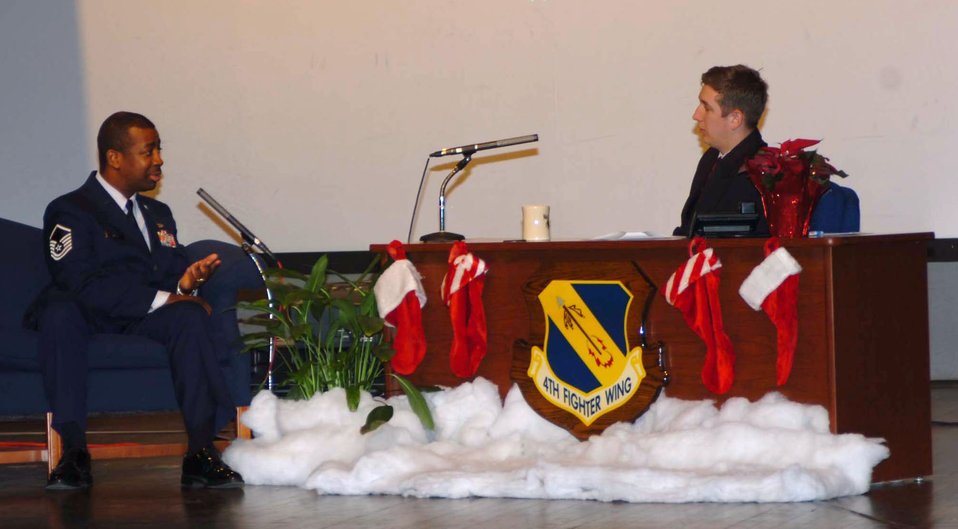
Drinking program

SEYMOUR JOHNSON AIR FORCE BASE, N.C. (AFPN) -- Master Sgt. Troy Harris explains the new 0-0-1-3 drinking program to the audience of Airmen and 1st Lt. Devin Robinson who plays the talk show host. Sergeant Harris is in the 4th Medical Group